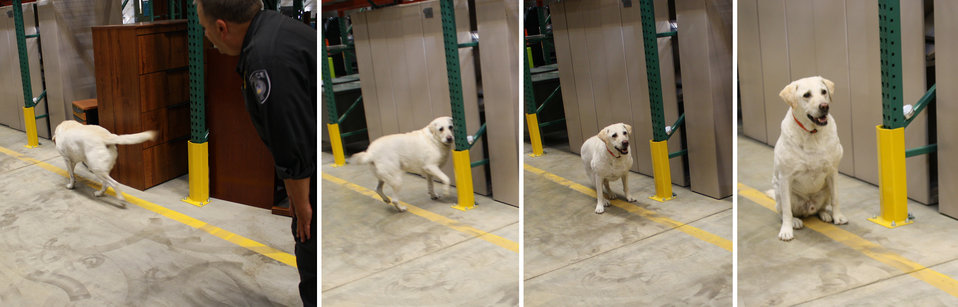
Officer Strawsburg and Banjo

Federal police officer Donald Strawsburg putting his bomb-sniffing buddy and K-9 officer Banjo through his paces using the NIST-developed training tool. For the purposes of this exercise, the odor-releasing material has been infused with the vapor profile of PETN, a major component of many plastic explosives.